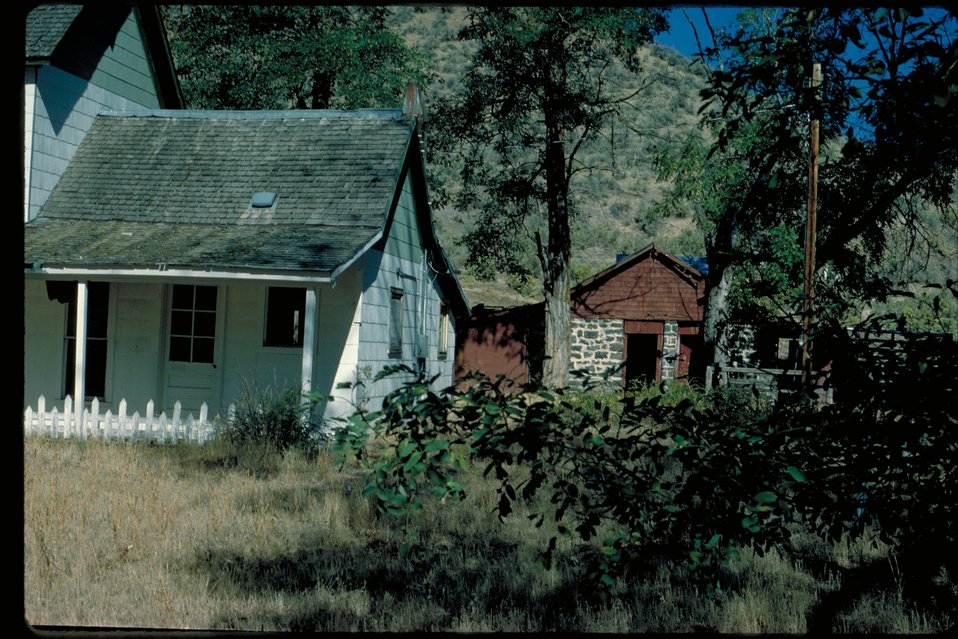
Oregon Trail Mayfield Lower Snake River District